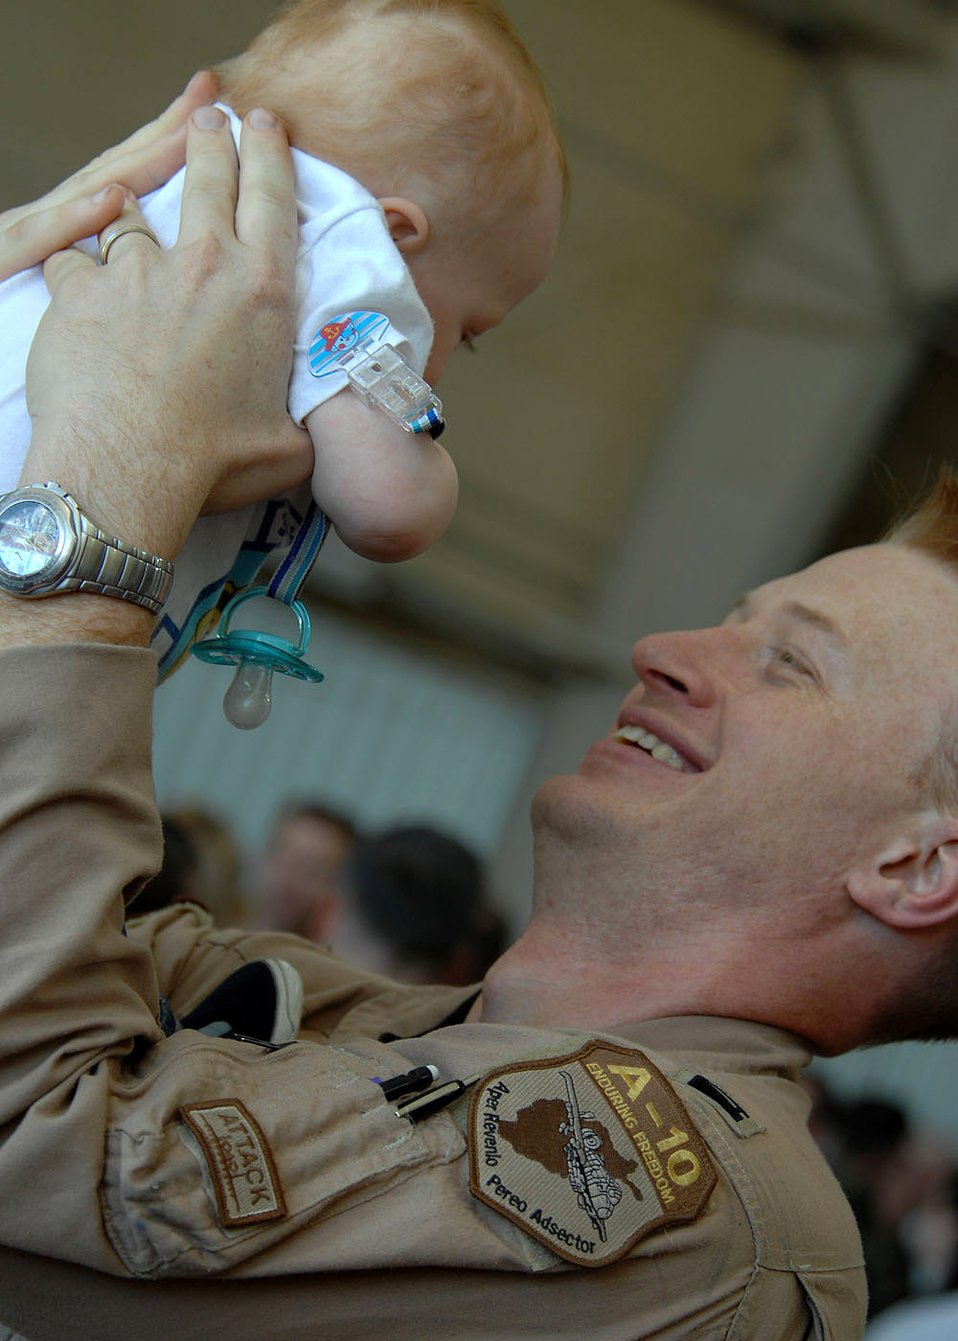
A little welcome home gift

Capt. Cory Naddy holds his son during a homecoming ceremony at Davis-Monthan Air Force Base, Ariz., Oct. 23 after returning from a deployment to Afghanistan. Captain Naddy is an A-10 Thunderbolt II pilot.